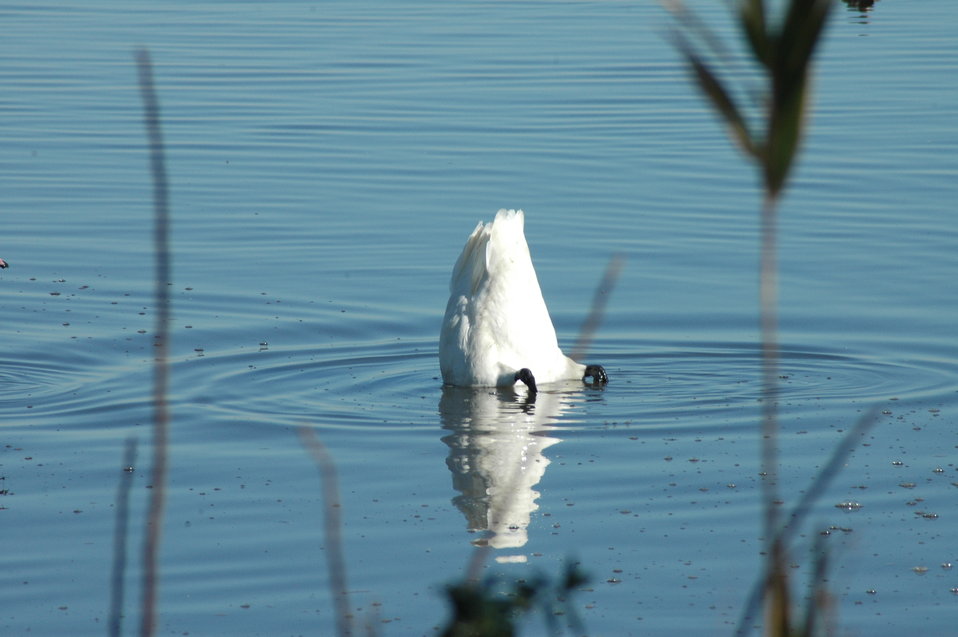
Taking a dip!

At Mattamuskeet National Wildlife Refuge.